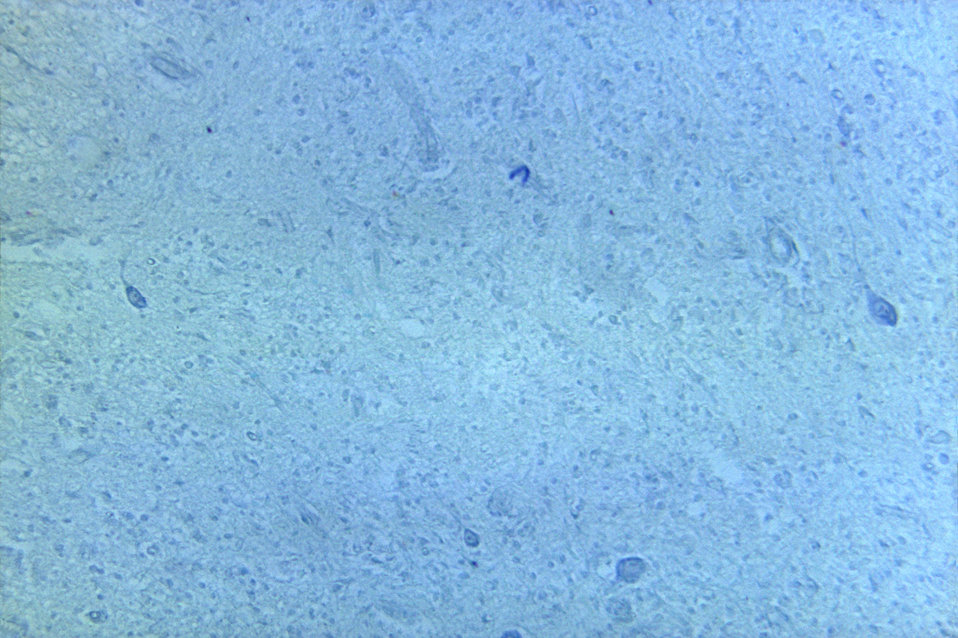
A photomicrograph of normal cervical cord tissue using cresyl violet stain technique.